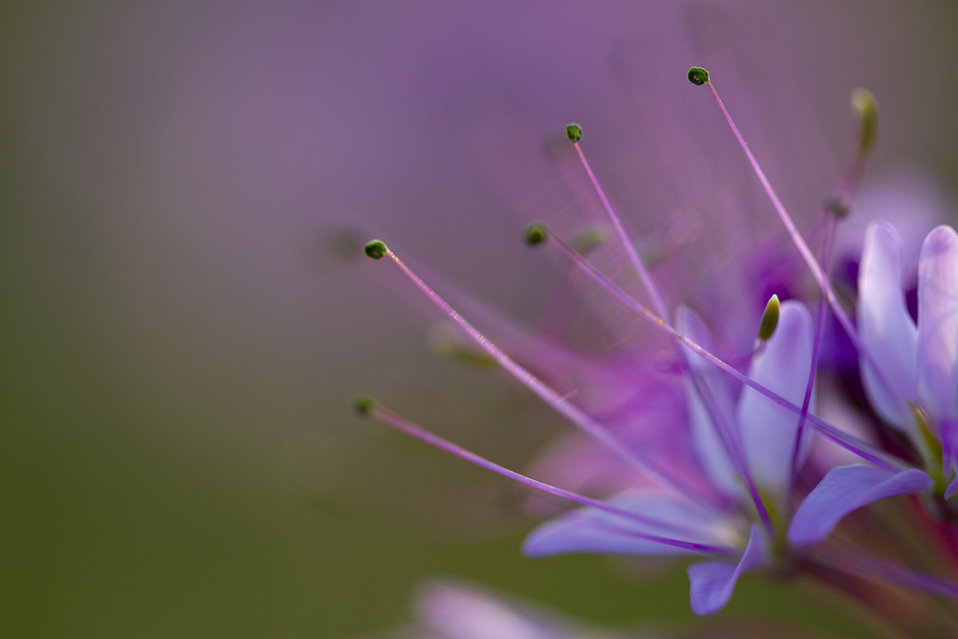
September

wild cleome
Rocky Mountain Arsenal National Wildlife Refuge, CO